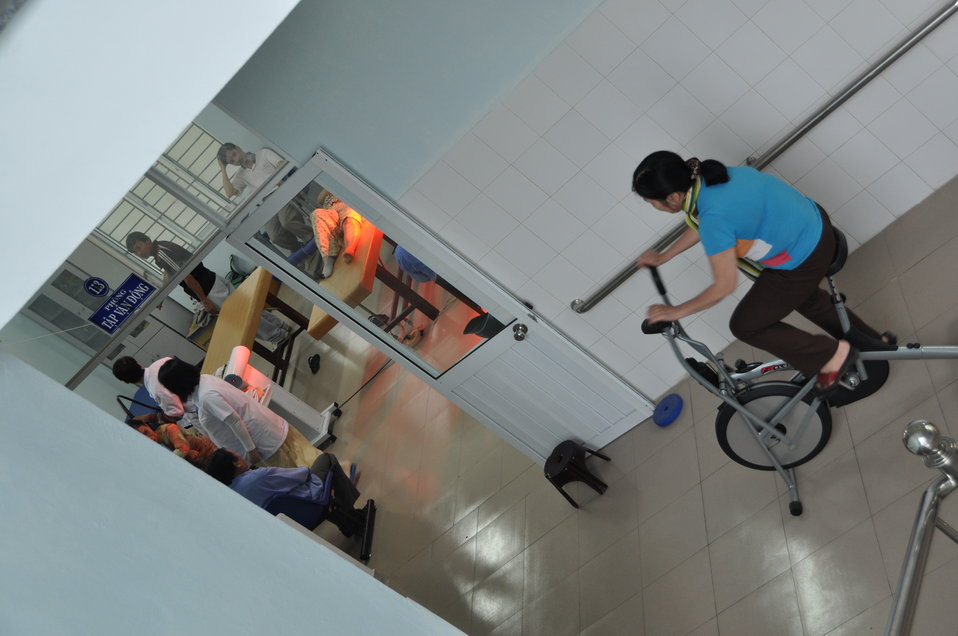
USAID support to Thanh Khe District Hospital

USAID-supported equipment and training help the staff at Thanh Khe District Hospital to meet the physical therapy needs of the disabled population of Danang.